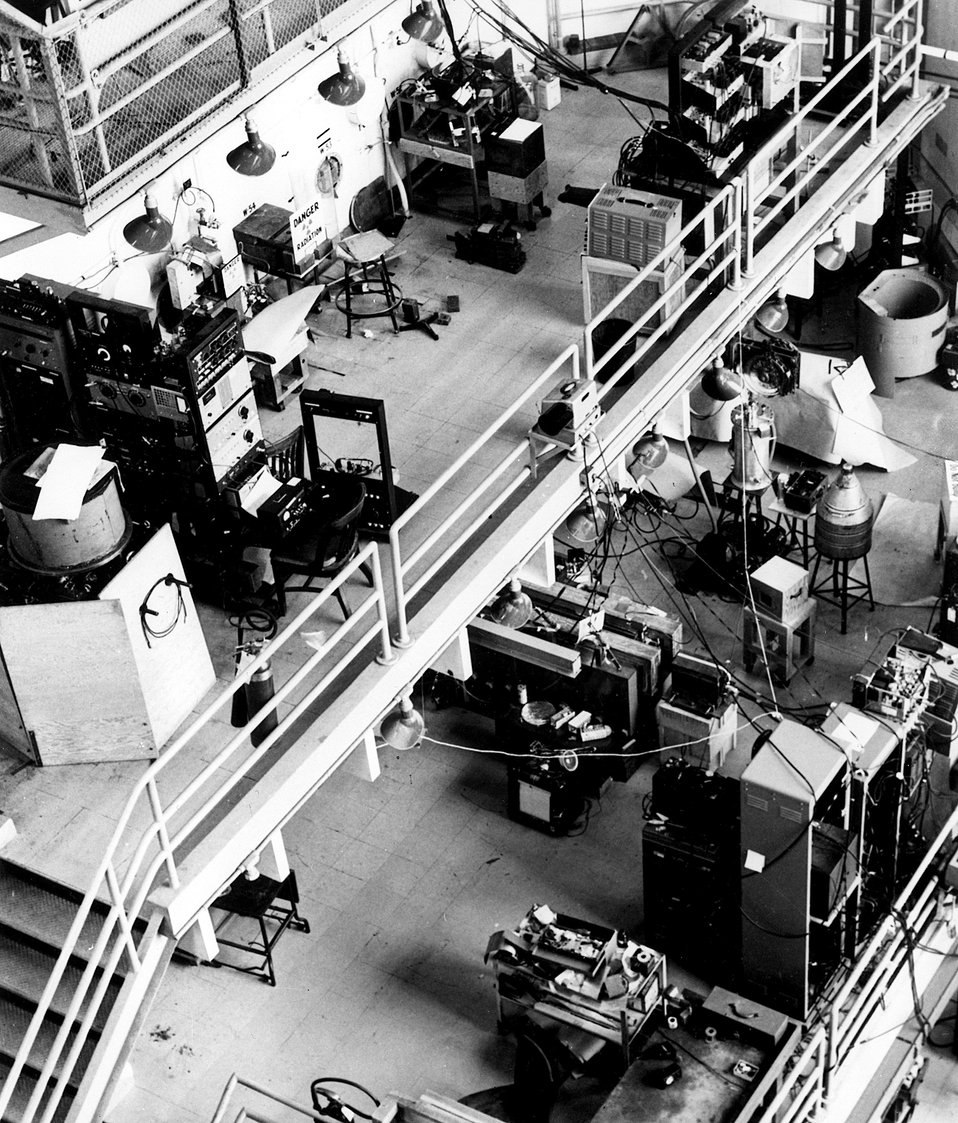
Latest view of the west face of the Brookhaven reactor, showing research equipment placed to utilize beams of neutrons which emerge from ports in the face. c. 1953